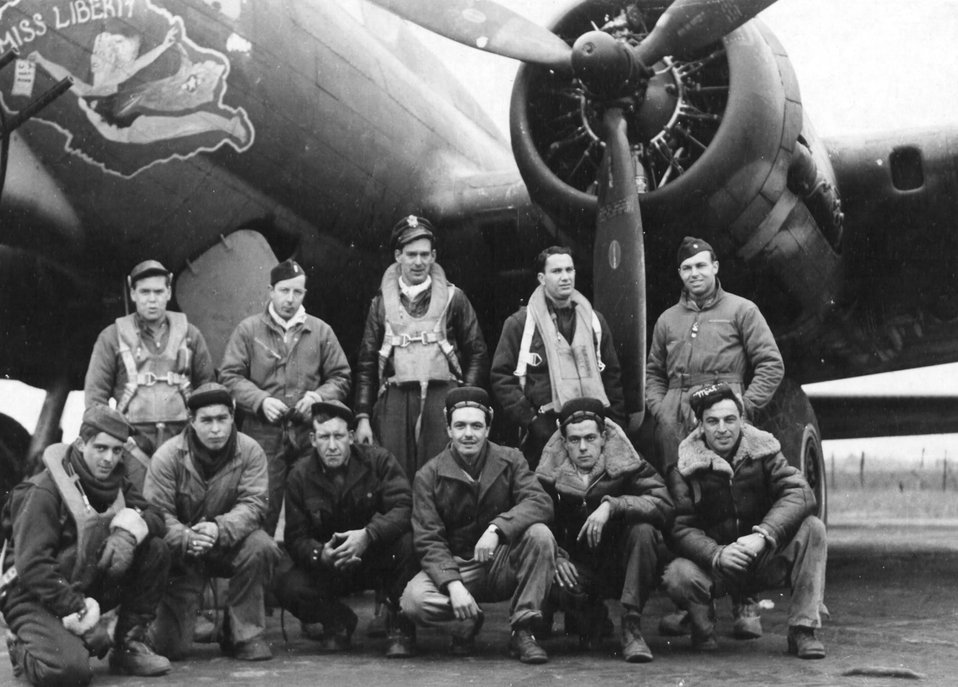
Barksdale Airmen restore B-17G for 8th Air Force museum

Maj. Gen. Lewis E. Lyle (center back) and his crew pose in front of a B-17G